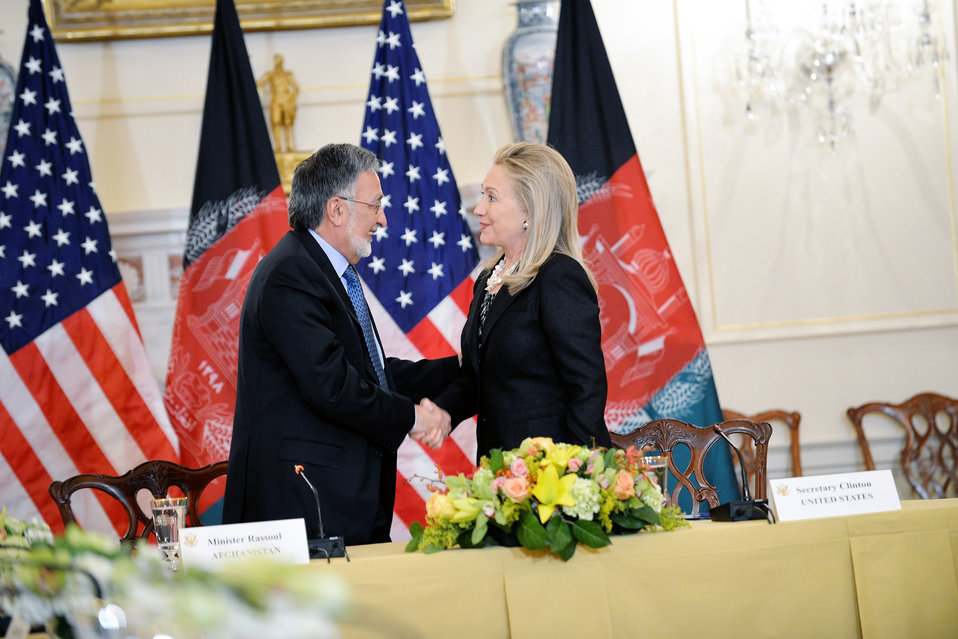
Secretary Clinton Shakes Hands With Afghan Foreign Minister Rassoul

U.S. Secretary of State Hillary Rodham Clinton shakes hands with Afghan Foreign Minister Zalmai Rassoul after the U.S.-Afghanistan Bilateral Commission at the U.S. Department of State in Washington, D.C., October 3, 2012.